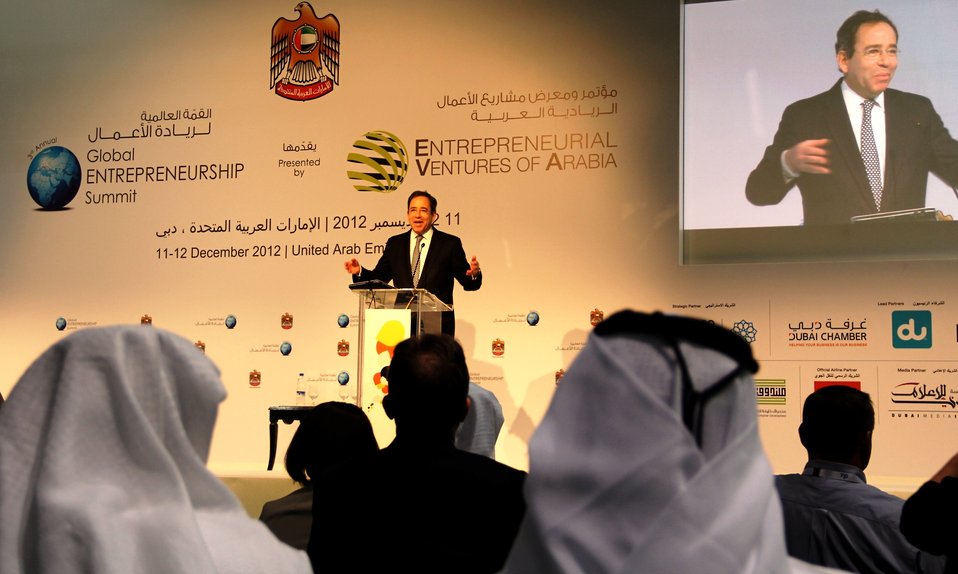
Deputy Secretary Nides Delivers Remarks at the Global Entrepreneurship Summit

Deputy Secretary of State Thomas Nides delivers remarks at the Global Entrepreneurship Summit (GES) in Dubai, United Arab Emirates, December 12, 2012.